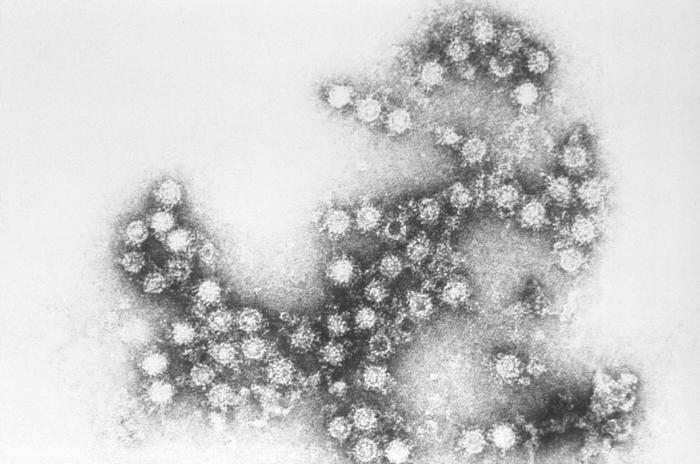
Using immunoelectron microscopic technique, one is able to discern the morphologic traits of the Coxsackie B4 virus virions.